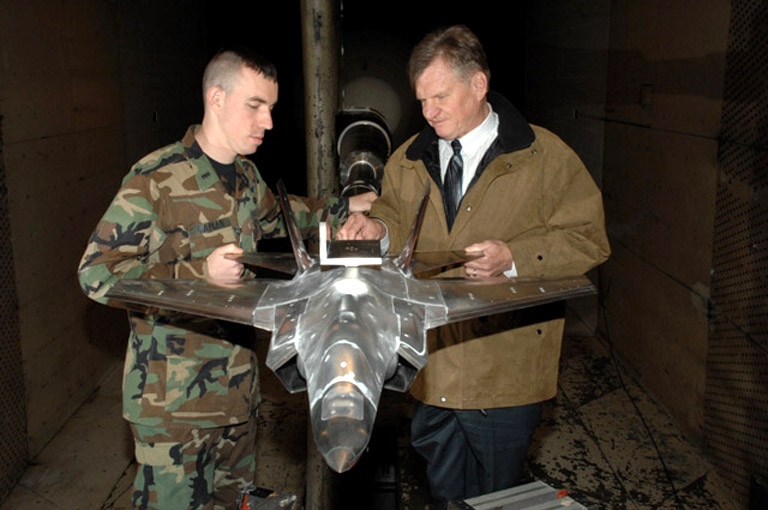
F-35 production inches closer after wind tunnel test

First Lt. Ezra Caplan and Charlie Smith examine a 12-percent scale model of the Navy variant of the F-35 Lightning II joint strike fighter during a break in the final pre-production aerodynamics testing done on all F-35 variants at Arnold Engineering Development Center, Arnold Air Force Base, Tenn. Lieutenant Caplan is the AEDC Air Force project manager and Mr. Smith is the Aerospace Testing Alliance senior project engineer.